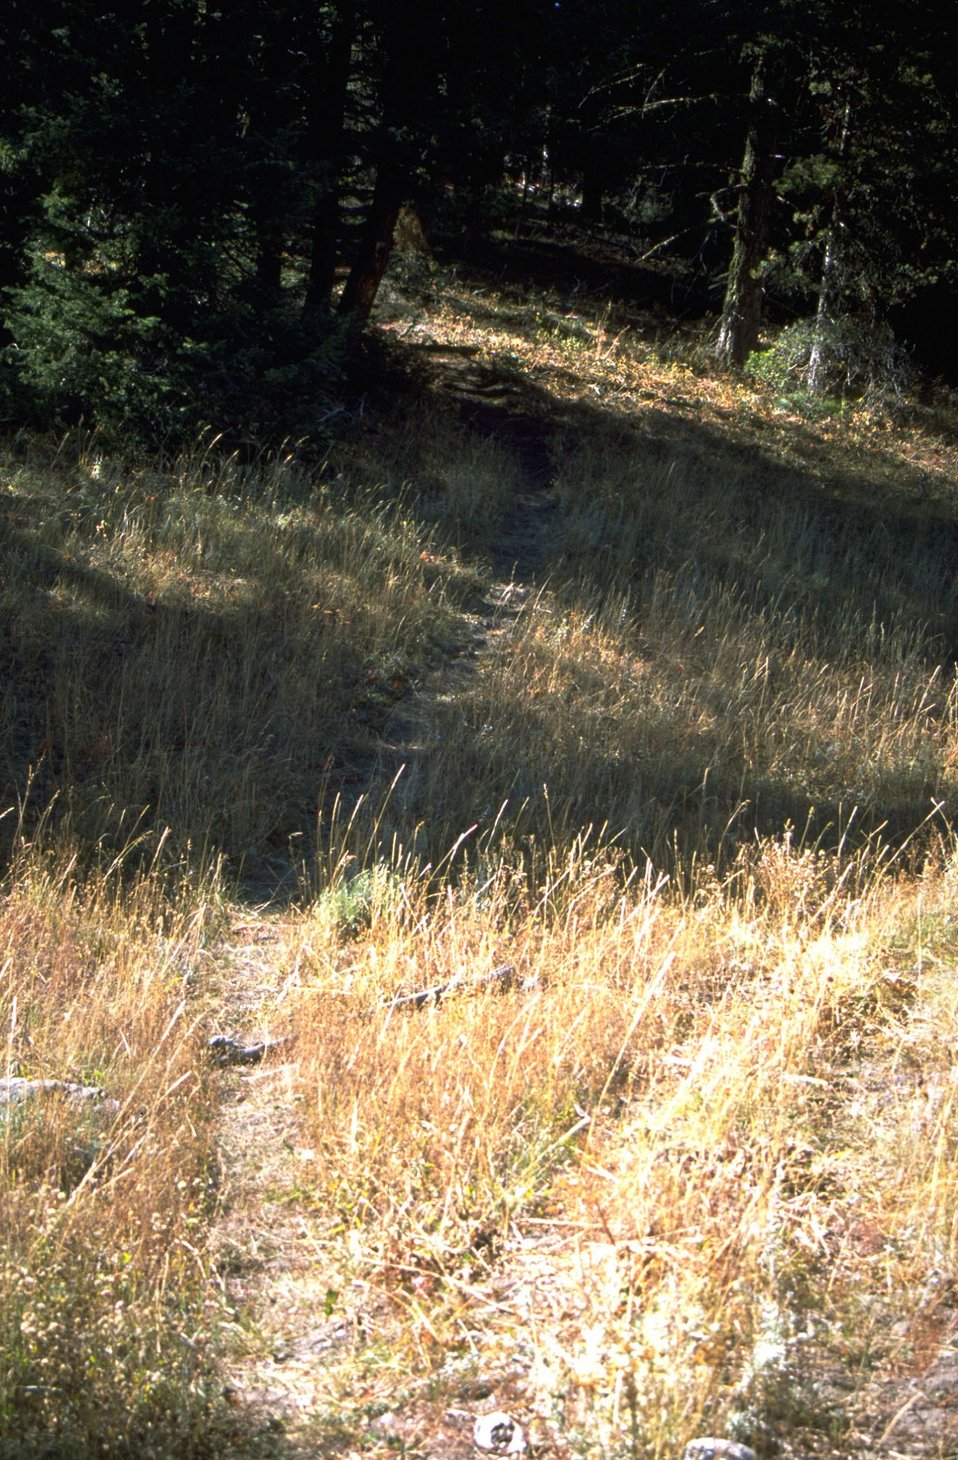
Trail passing through grassy opening